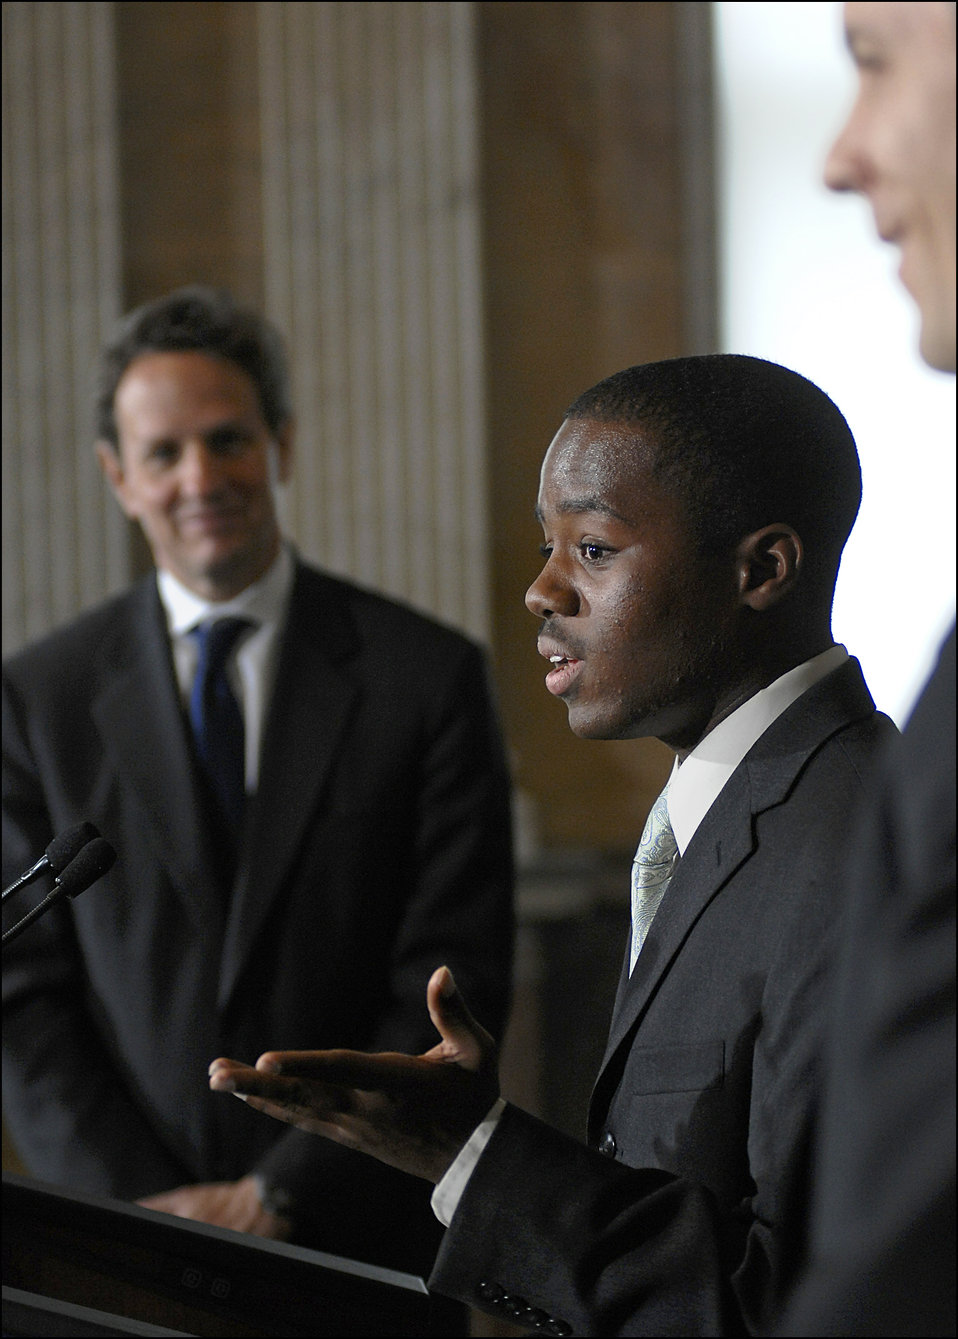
National Financial Capability Challenge, 4/28/10

Aaron Moore speaks at the National Financial Capability Challenge recognition event in the Treasury Cash Room.